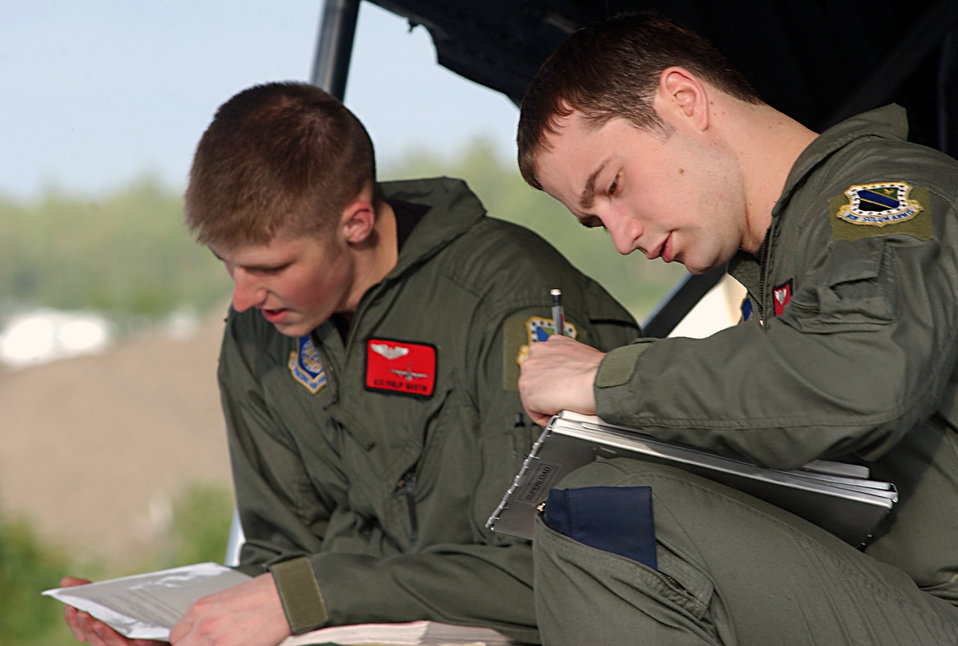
Weight check

ELMENDORF AIR FORCE BASE, Alaska -- Loadmasters Senior Airman Adam Adams and Airman 1st Class Philip Martin compare weight and balance worksheets while they wait for their cargo to arrive during Cooperative Cope Thunder. The airmen are assigned to the 517th Airlift Squadron here. The squadron's C-130 Hercules deliver people and cargo to remote drop zones and land on remote runways during the exercise. The exercise is a Pacific Air Forces-sponsored air combat training exercise which runs through June 20.